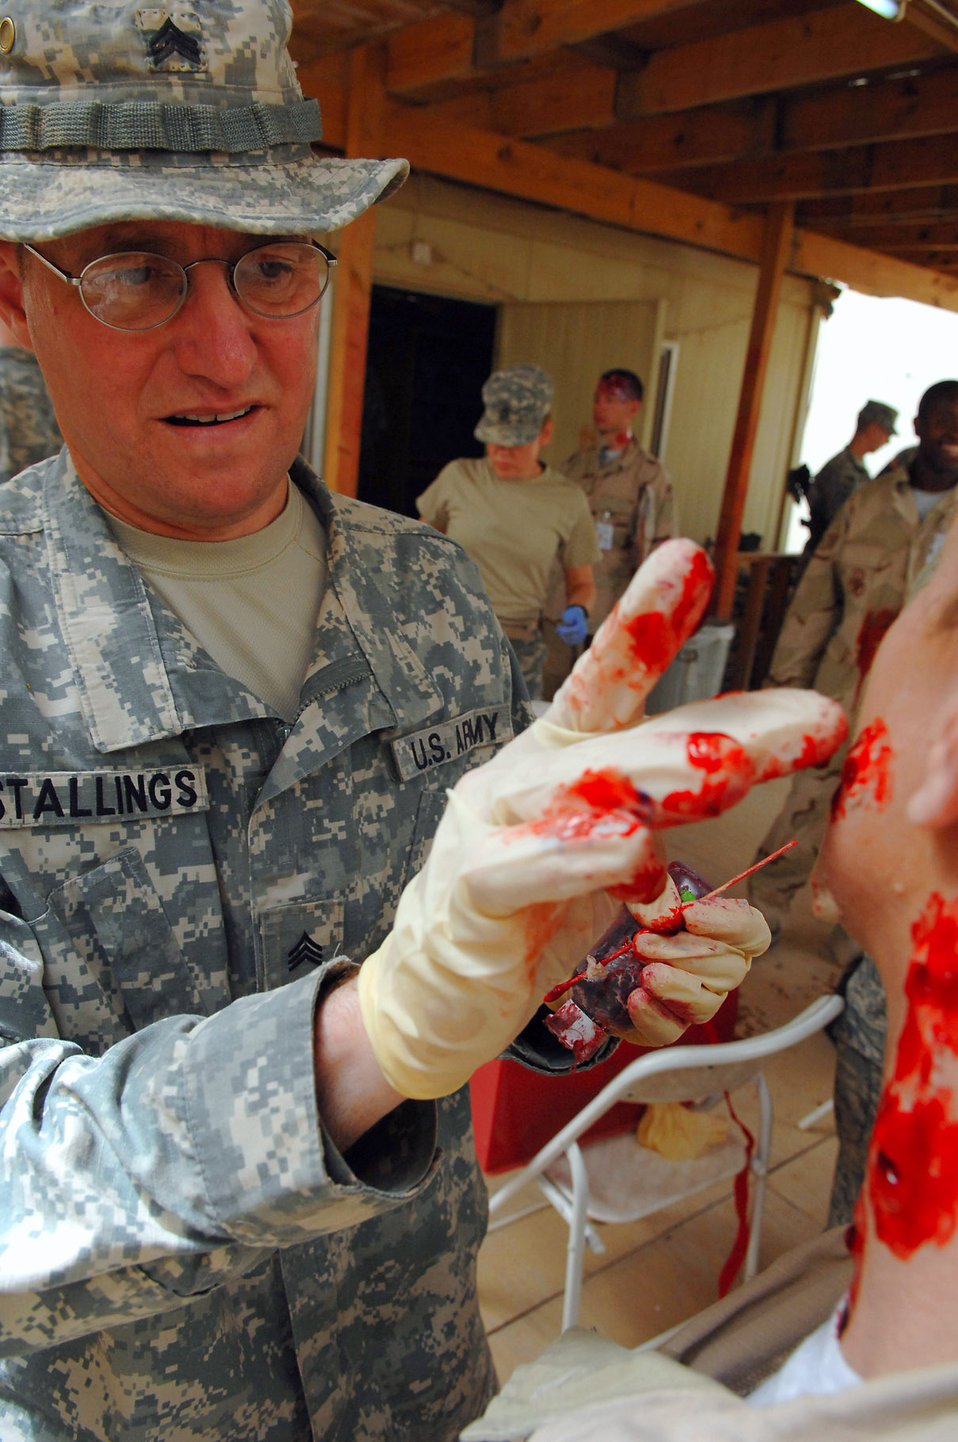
That looks like it hurts

Army Sgt. Robert Stallings applies moulage to the face of Tech. Sgt. Yvonne Lough to bring an element of realism to a mass casualty battle drill March 31 at Balad Air Base, Iraq. The battle drill tested the ability of base members to respond and react to a mass casualty event by coordinating assets, patient movement and execution procedures. Sergeant Stallings is assigned to the 325th Combat Support Hospital medic and deployed from Hanscom Air Force Base, Mass. Sergeant Yvonne Lough is a 332nd Expeditionary Medical Operations Squadron respiratory therapist deployed from Kessler AFB, Miss.